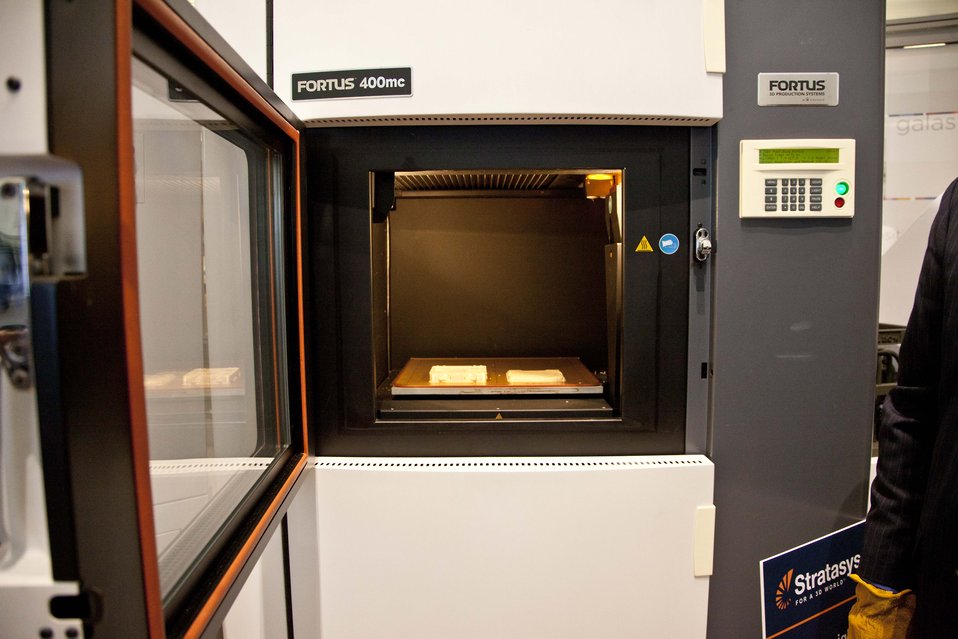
AEMC Summit

Additive manufacturing (or 3D printing) is a new way of making products and components from a digital model to reduce manufacturing waste, save energy and shorten the time needed to bring a product to market. On display at the AEMC Summit were a variety of 3D printers from the Department's Manufacturing Demonstration Facility at Oak Ridge National Lab and America Makes, the first in a series of National Network of Manufacturing Innovation institutes. Pictured here is a polymer 3D printer that has just finished printing a package designed to hold a solar cell.